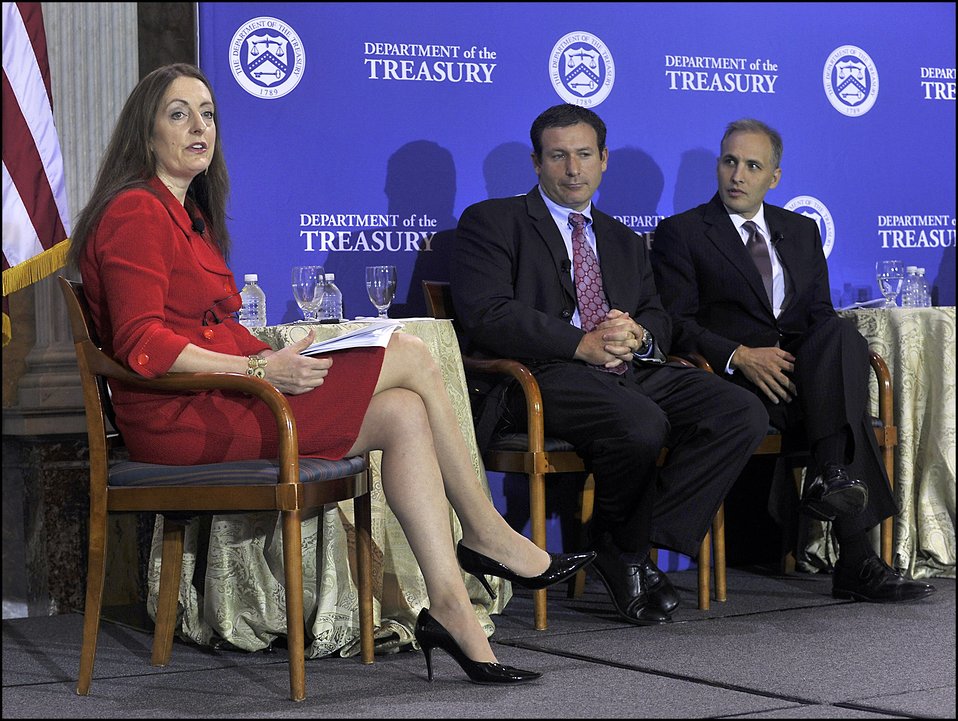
Ten Years Later: Progress and Challenges in Combating Terrorist Financing Since 9/11, 09/08/11

Assistant Secretary for Intelligence and Analysis Leslie Ireland moderated the first panel of the symposium, titled, 'Ten Years Later: Today’s Terrorist Financing Landscape.' Panelists included: Howard Mendelsohn, Senior Vice President, PNC Financial Services Group and former Deputy Assistant Secretary for Intelligence and Analysis;
Matt Olsen, Director, National Counterterrorism Center (NCTC);
Mike Smith, Director, United Nations Counterterrorism Executive Directorate;
Ken Wainstein, Partner, O’Melveny and Myers, LLP, former Assistant to the President for Homeland Security and Counterterrorism, and former Assistant Attorney General for National Security